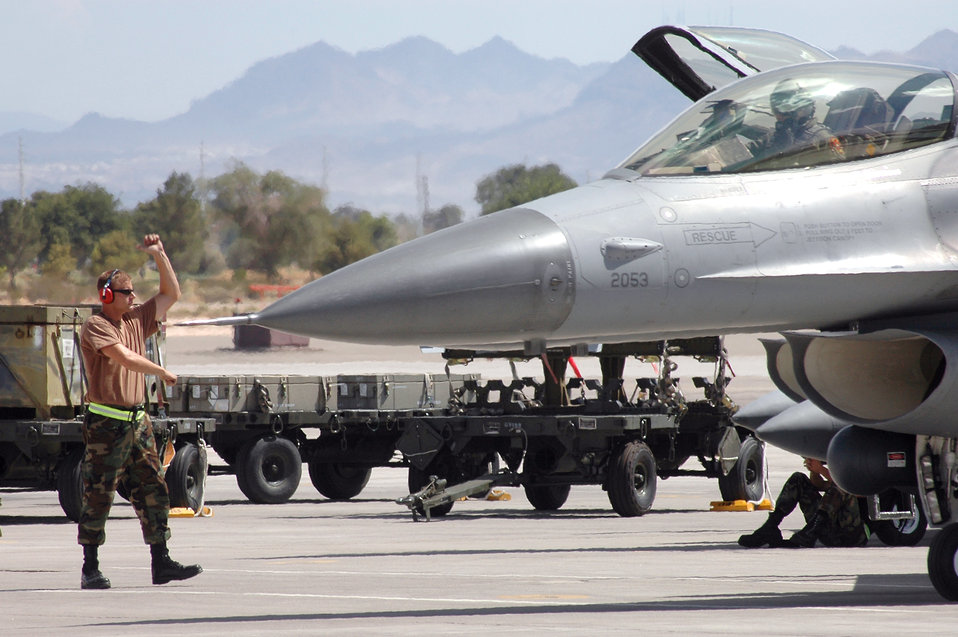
Getting ready for Red Flag

Senior Airman Brent Bott marshals an F-16 Fighting Falcon for a mission at Red Flag 06-02 at Nellis Air Force Base, Nev., on Aug. 8. Airman Bott is a crew chief with the Iowa Air National Guard's 132nd Fighter Wing in Des Moines.